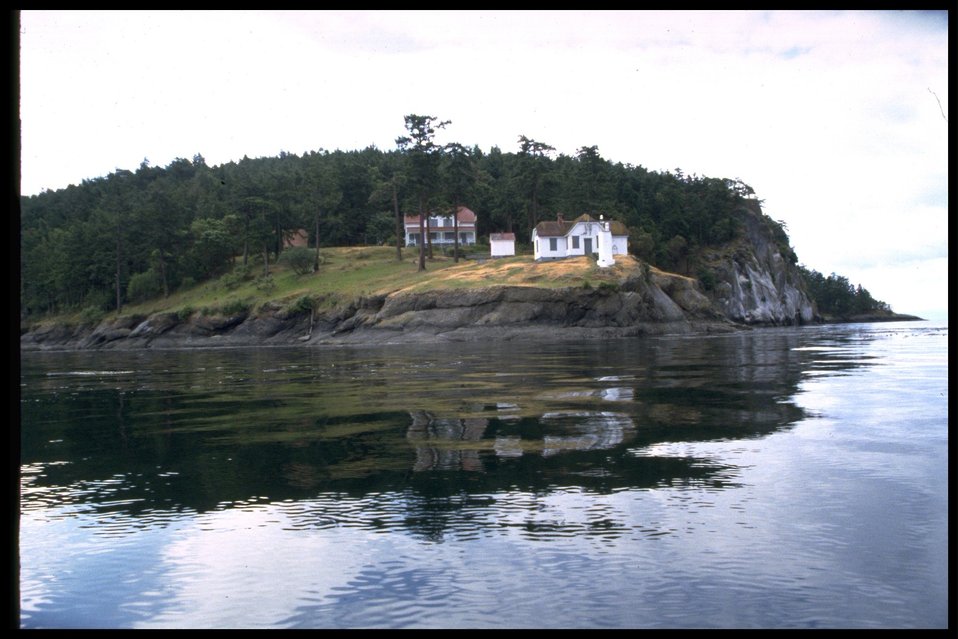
Turn Point from water with light station and buildings. Series of 17 photos.